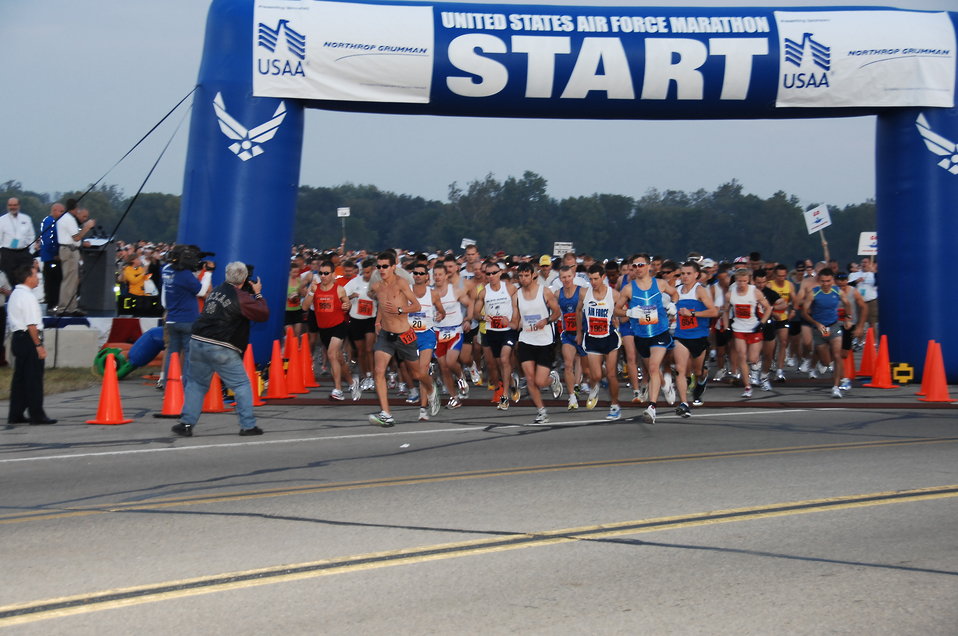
Ready, set... go!

A record field of runners take off to start the 12th Annual U.S. Air Force Marathon at Wright-Patterson AFB, Ohio. Nearly 7,400 people registered to take part in the marathon events this year.